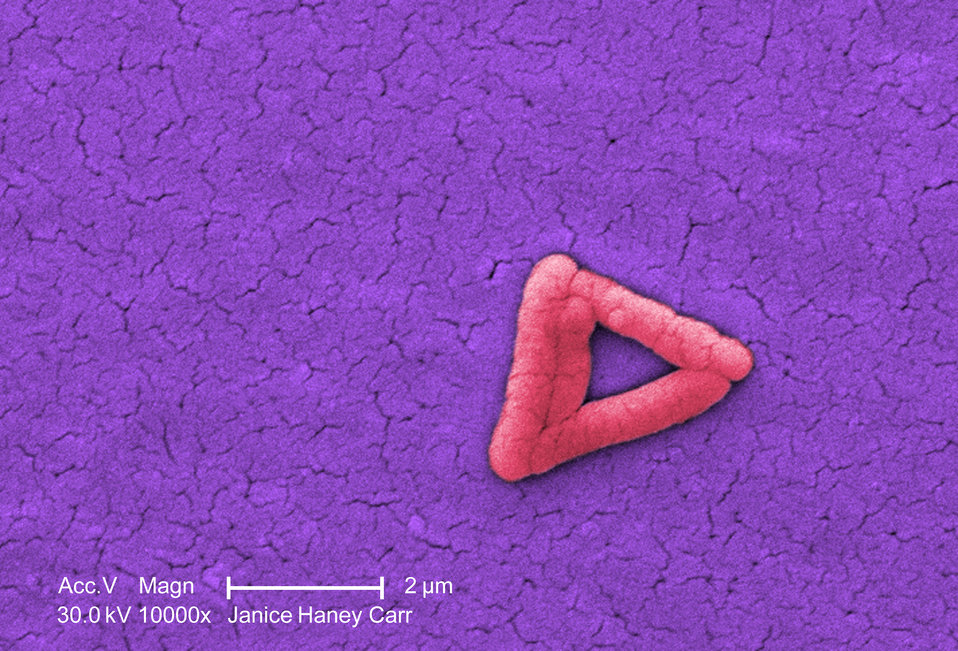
Under a high magnification of 10000X, this colorized scanning electron micrograph (SEM) revealed the presence of four Gram-negative Salmonella typhimurium bacteria, that had been isolated from a pure culture. See PHIL 10976 for a black and white version of this image.How do people catch Salmonella??